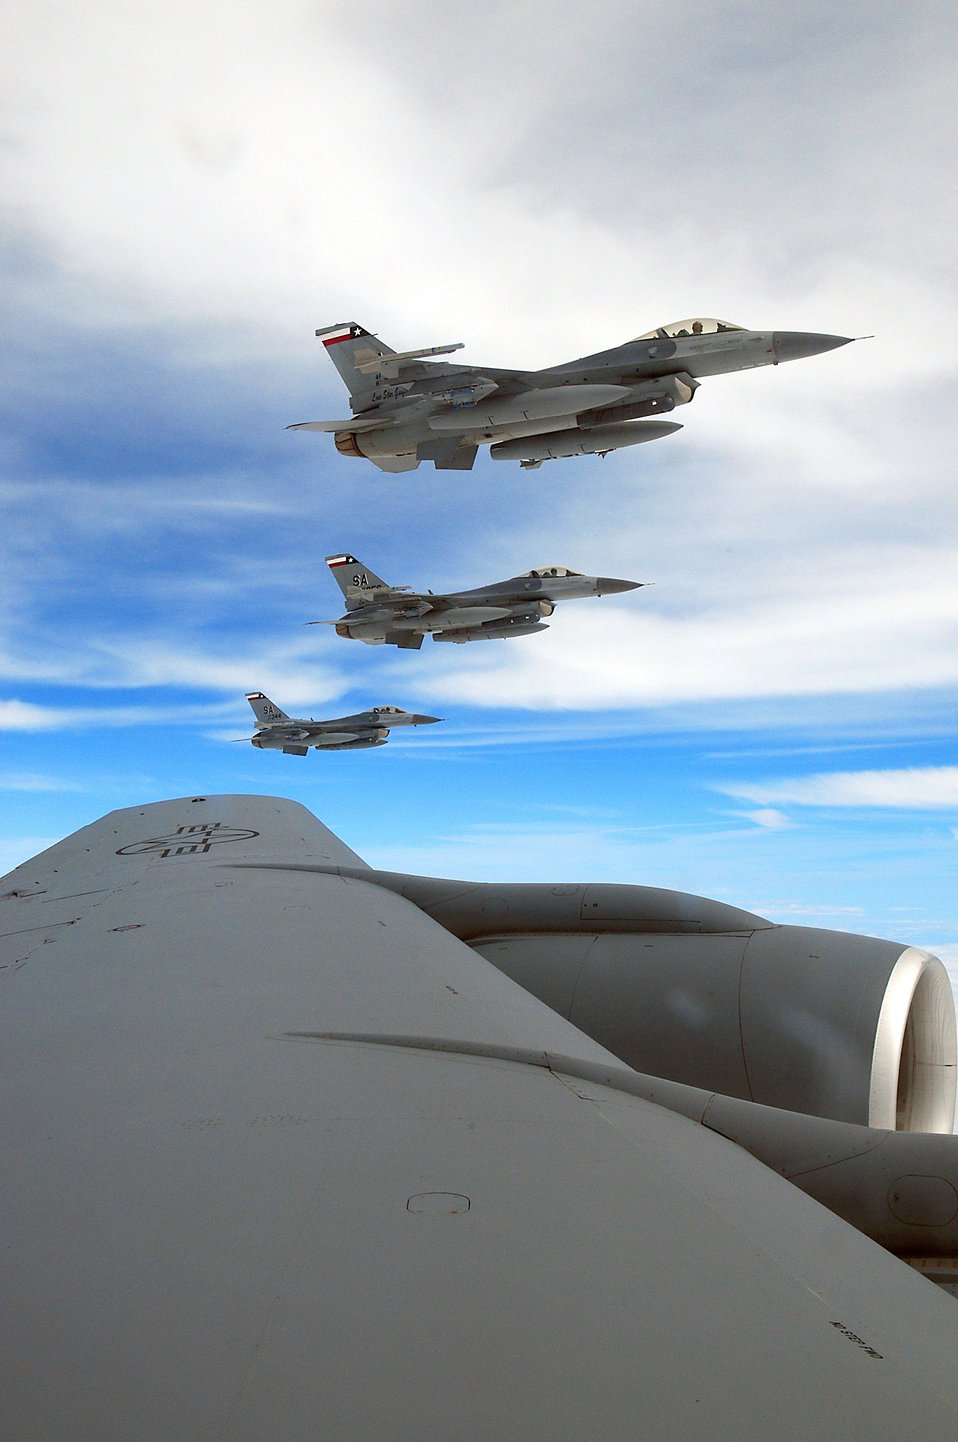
Texan power

F-16 Fighting Falcons assigned to the Texas Air National Guard's 149th Fighter Wing at Lackland Air Force Base fly alongside a KC-135 assigned to the Iowa Air National Guard's 185th Air Refueling Wing, March 6, 2010.